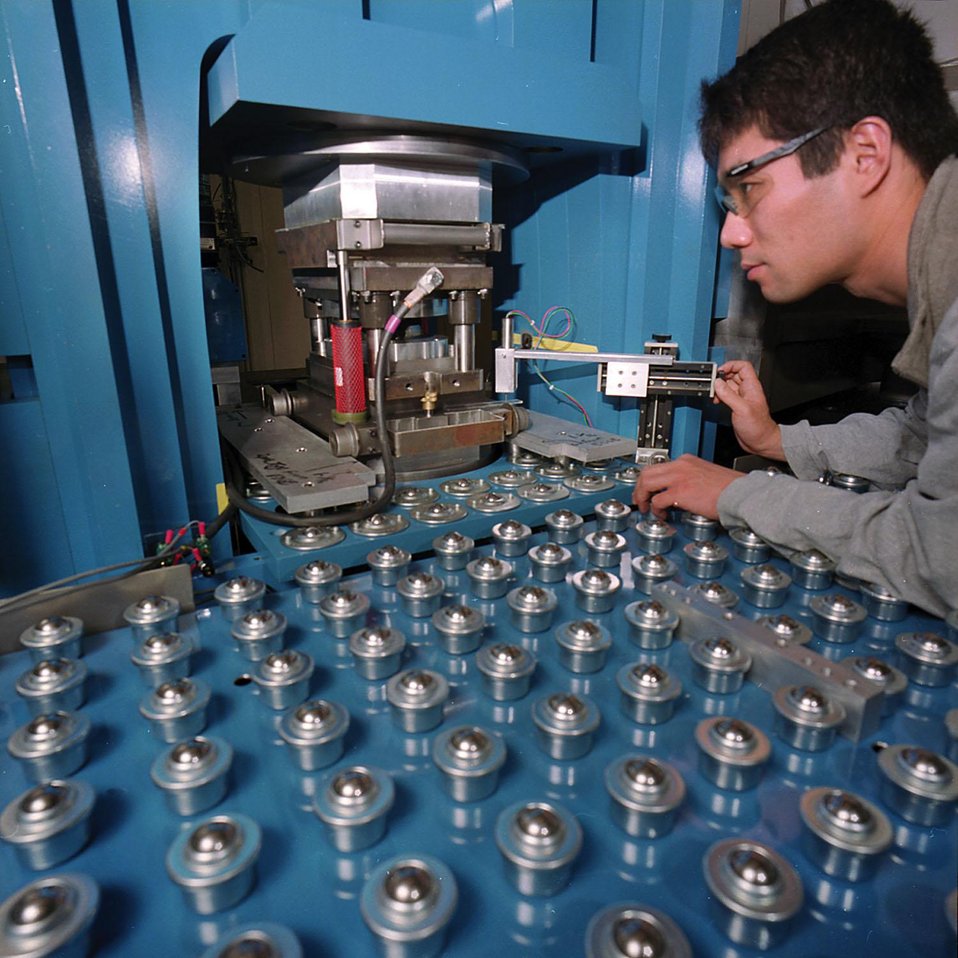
SCIENTIST WORKING IN THE HIGH-PRESSURE LAB OF THE GEOSOILENVIROCARS EARTH SCIENCE RESEARCH FACILITY.

WORKING TO STUDY THE ATOMIC STRUCTURE OF THE CENTER OF THE EARTH, UNIVERSITY OF CHICAGO RESEARCHERS USED THE GEOSOILENVIROCARS EARTH SCIENCE RESEARCH FACILITY AT ANL'S ADVANCED PHOTON SOURCE TO PRODUCE TEMPERATURE AND PRESSURE CONDITIONS CLOSE TO THOSE AT THE CENTER OF THE EARTH.